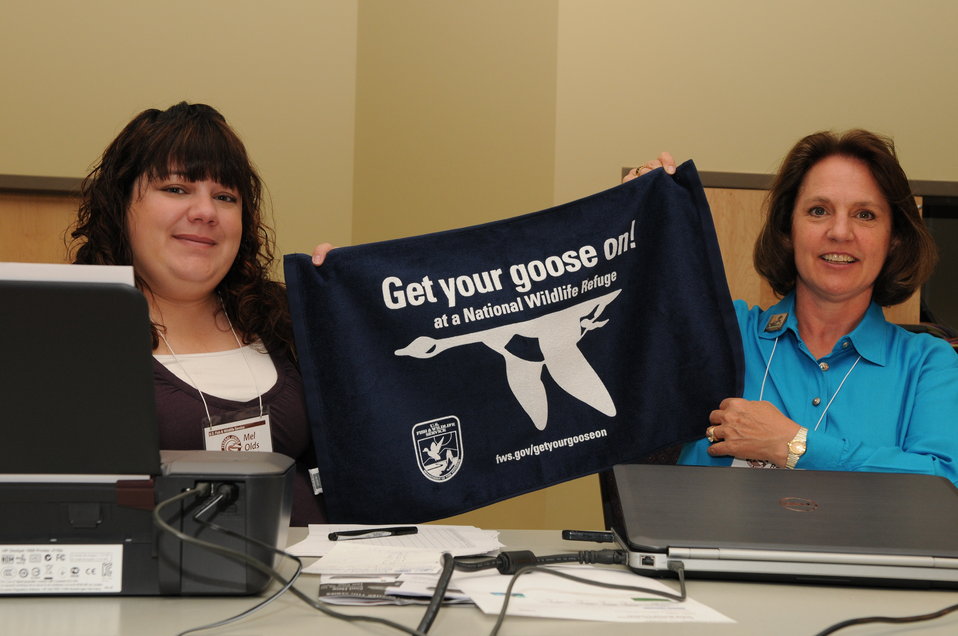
Get your goose on!

The U.S. Fish & Wildlife Service sponsored the 2012 Federal Duck Stamp Art Contest September 28 and 29 in Ogden, Utah, at Weber State University. A panel of five judges was responsible for choosing the art work used to design the 2013-2014 Migratory Bird Hunting and Conservation Stamp.